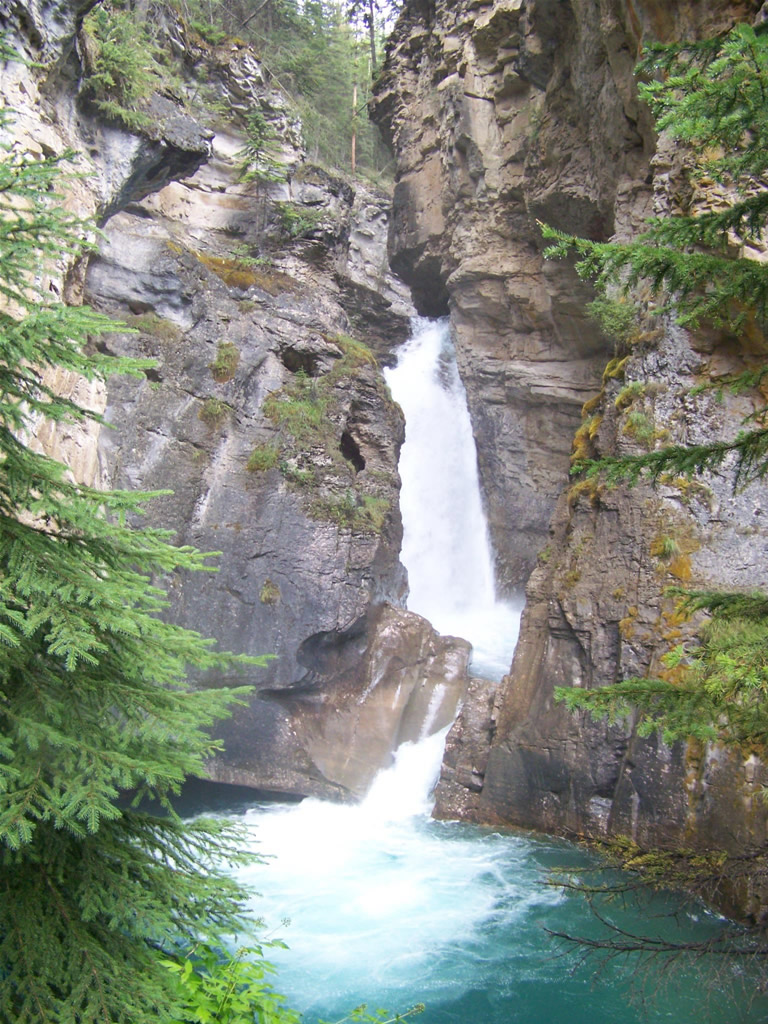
Uploaded by request of Alonzo Jake Spann

Taken in Banff National Park in Alberta Canada

This is called Johnston Canyon Lower Falls behind the photography shows the water coming from the rocks
into the river.